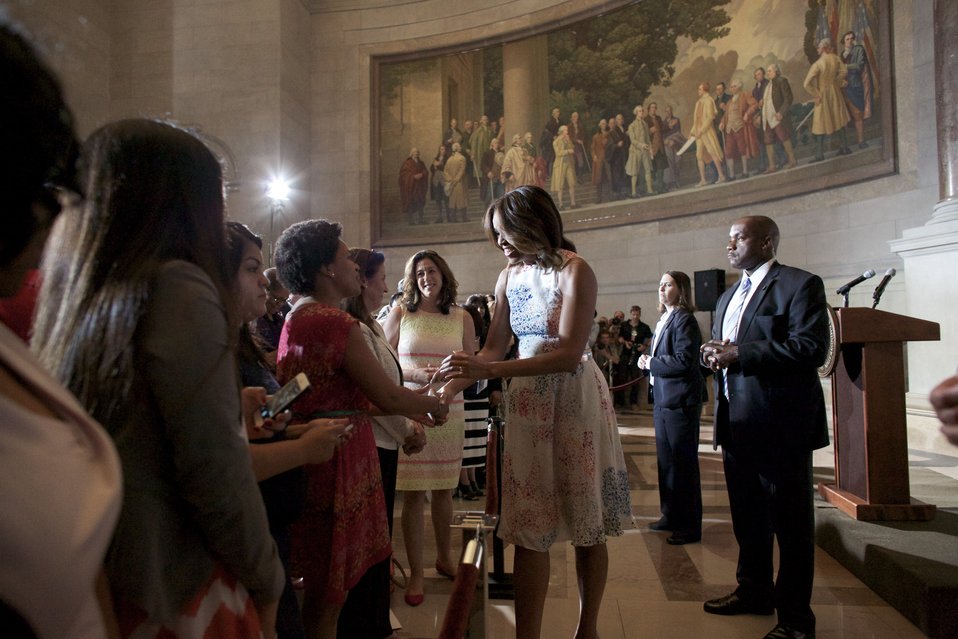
Naturalization Ceremony with Michelle Obama